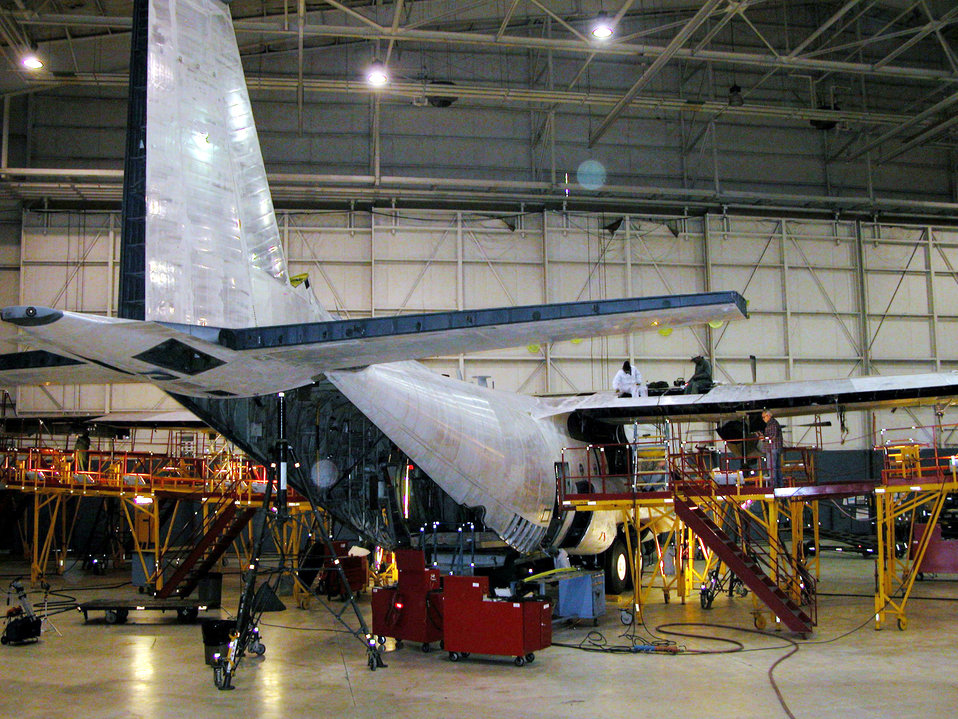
SUV of airlift

ROBINS AIR FORCE BASE, Ga. -- Warner Robins Air Logistics Center workers here consider the C-130 Hercules the SUV of airlift. The aircraft has been going strong for more than 50 years and with modernization efforts could last another 50 years.